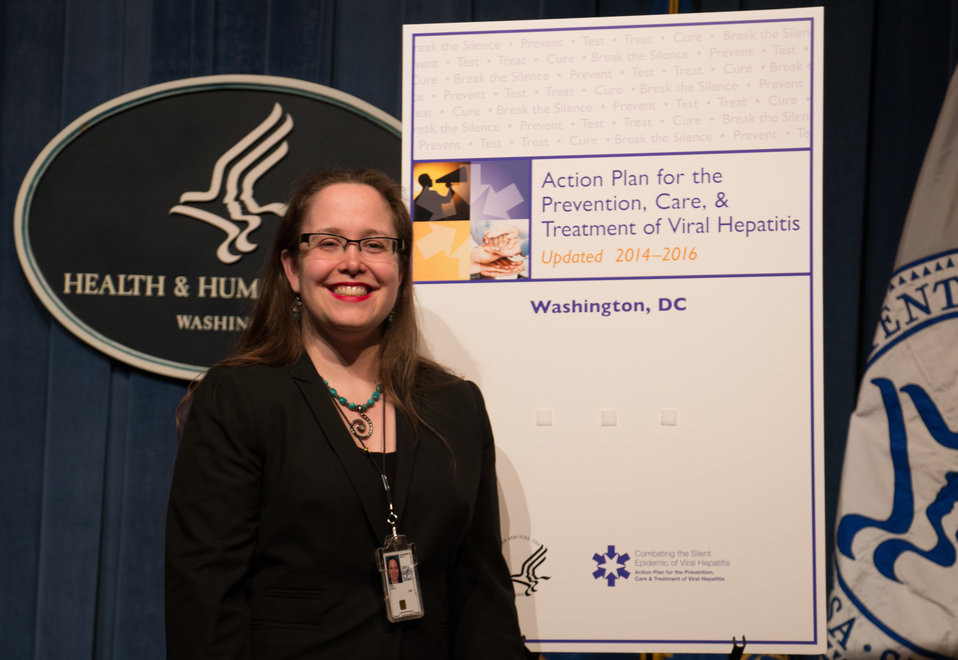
VHAP Launch (506 of 511)